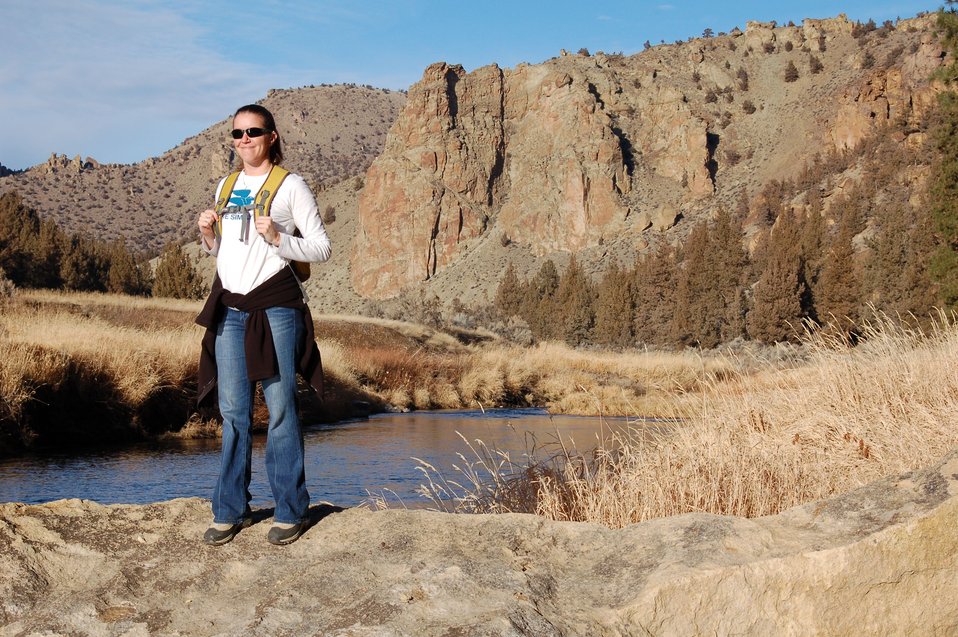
Erin Holmes in Oregon

Erin Holmes, manager of Tualatin River National Wildlife Refuge in Oregon, credits her mom for instilling in her an early love of nature.Credit: Karen Maier